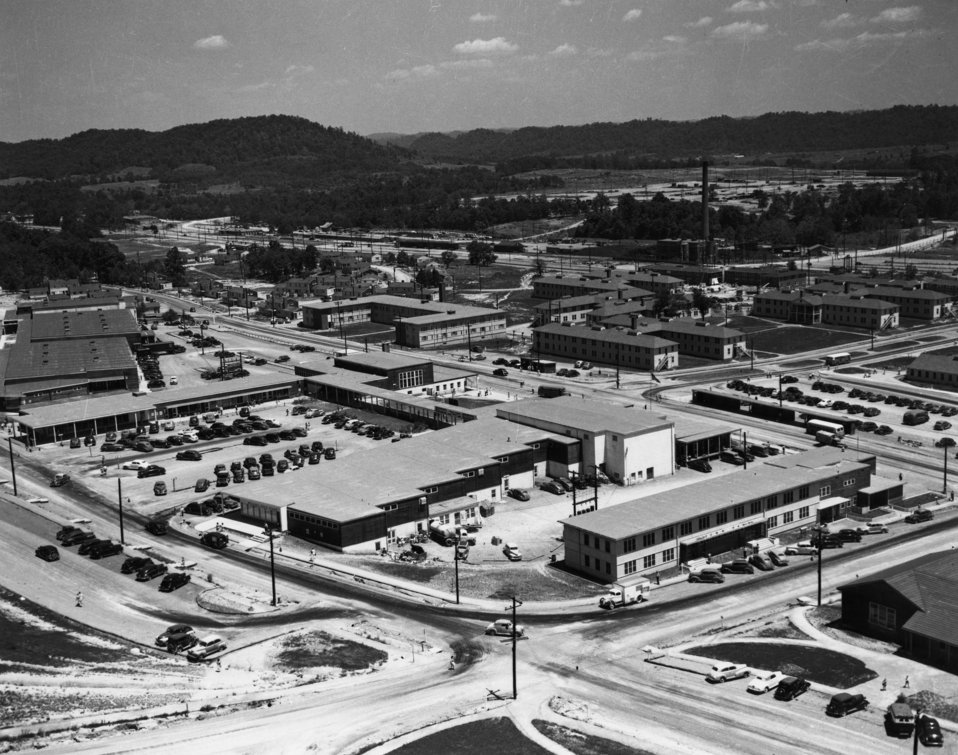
Aerial of Oak Ridge